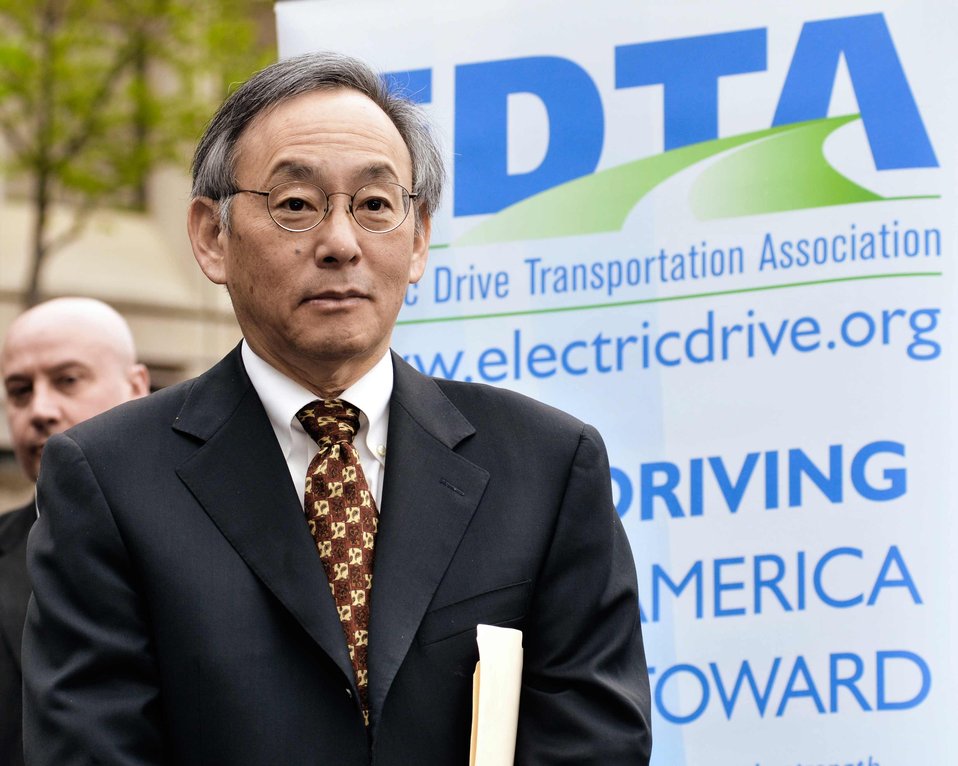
Electric Vehicles on Parade 5 of 5

US Secretary of Energy, Steven Chu, next to an event banner for the Electronic Drive Transportation Association.